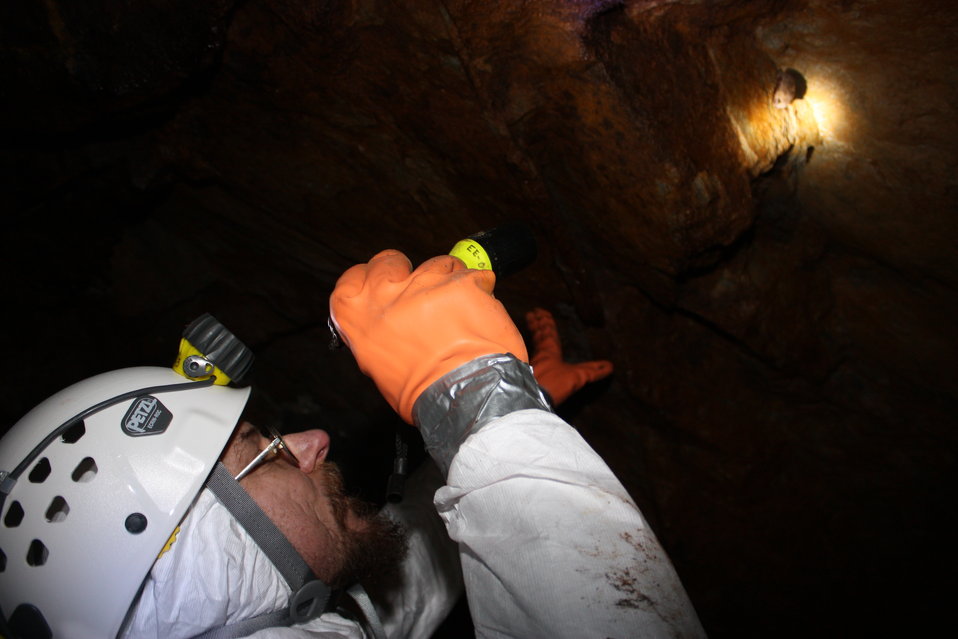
NPS wildlife technician Rick Varner with bat